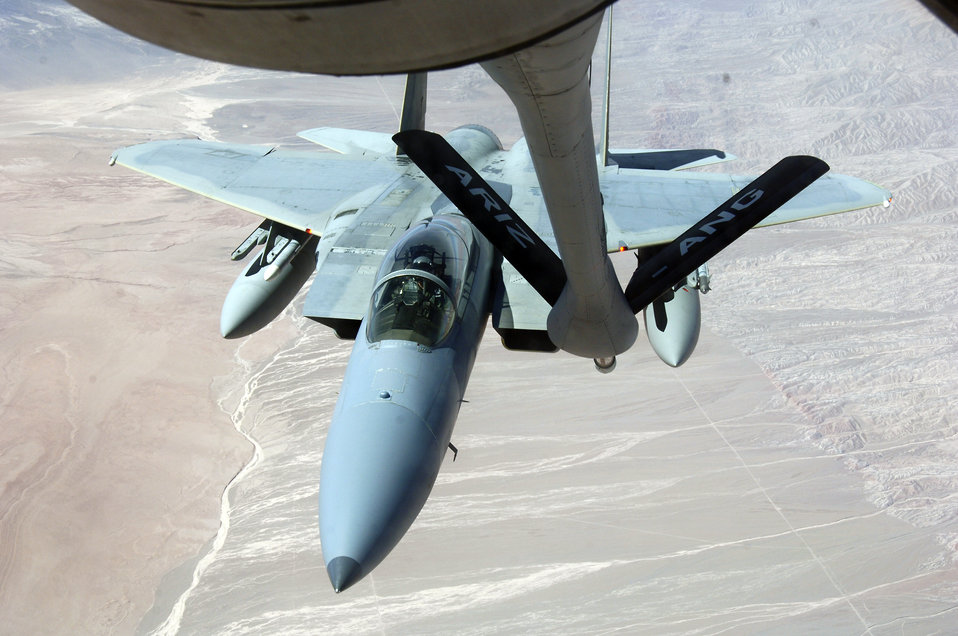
Tanker aircrews support exercise in Chile

An F-15 Eagle with the 159th Fighter Wing approaches the boom of a KC-135 Stratotanker during a refueling mission Oct. 22 over Chile. The Chilean air force hosted military members from the United States, Brazil, Argentina and France during Exercise Salitre II, a multinational exercise focused on interoperability.